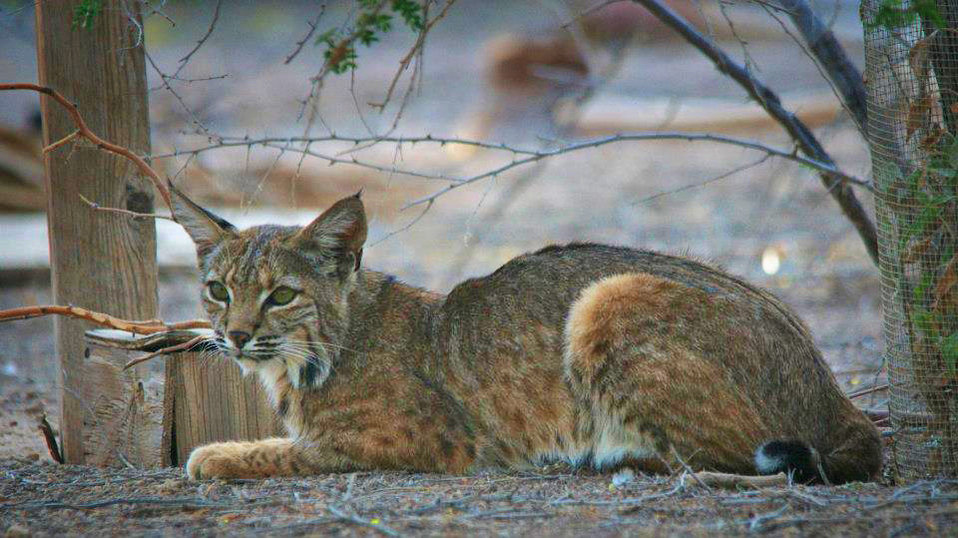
Bobcat at Sonny Bono NWR-1

These photos are taken in the evening very close to the Sonny Bono National Wildlife Refuge visitor center. (Photo by Mark Stewart/USFWS)

From the photographer: 'We have a lot of cover, a small pond and lots of rabbits. We have at least one family of Bobcats and I am expecting to see their kittens soon. They are used to people, but I use a 500 mm lens so as not to interfere with their normal activities.' -- Mark Stewart